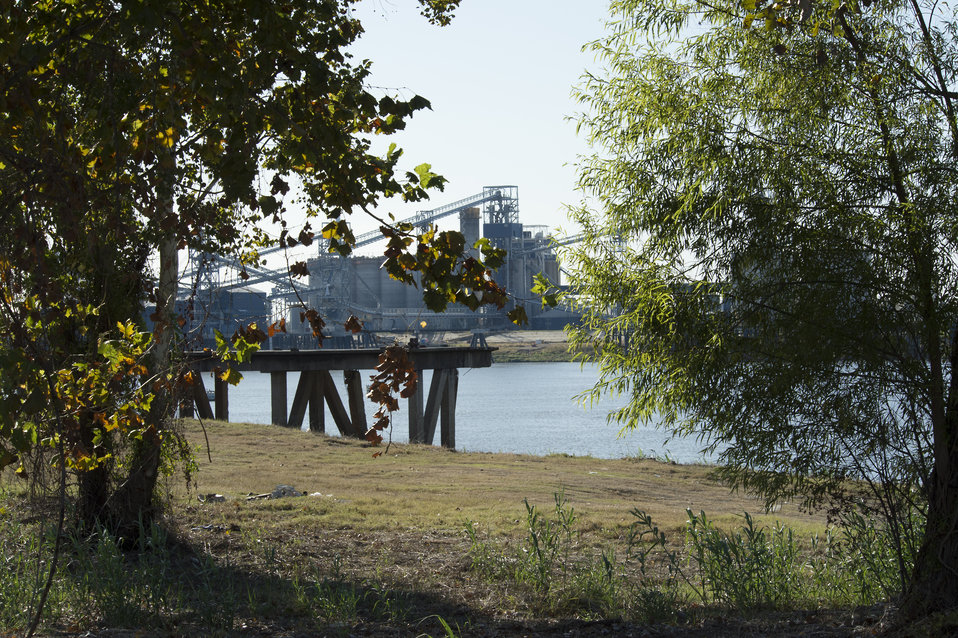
Grain elevators on the Mississippi River near the port of New Orleans, LA on Tuesday, Nov. 19, 2013.